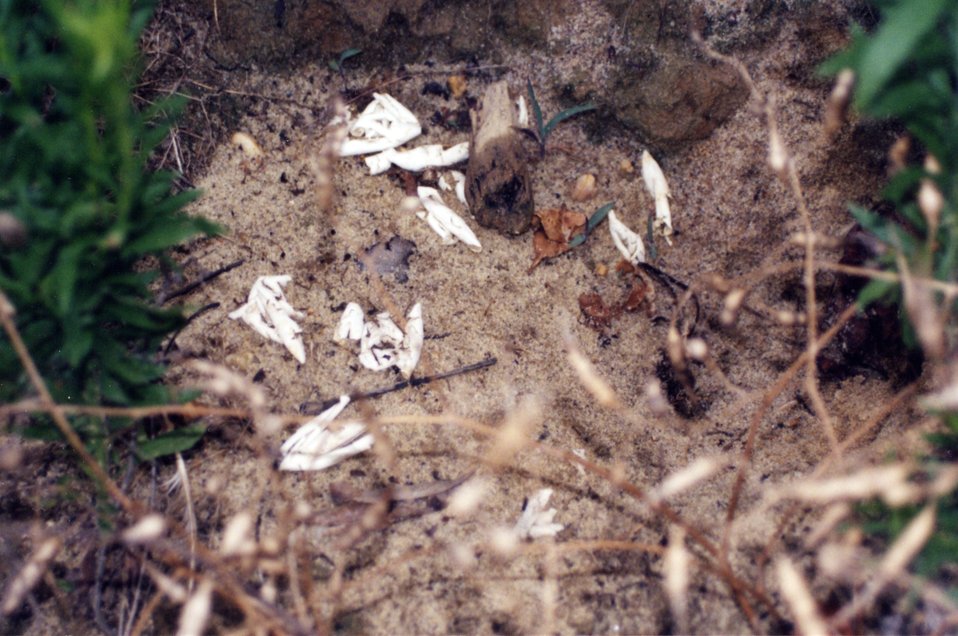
Diamondback terrapin eggs; the shreaded casings are an indication of predation.